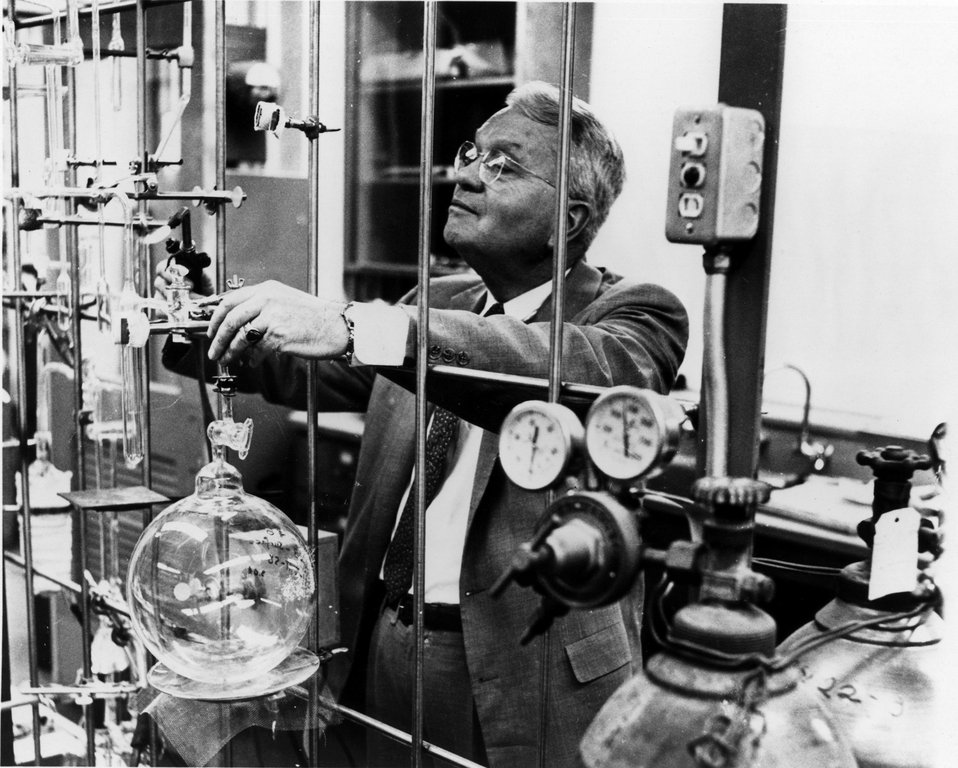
Harold Urey. Nobel Prize for Chemistry, 1934.